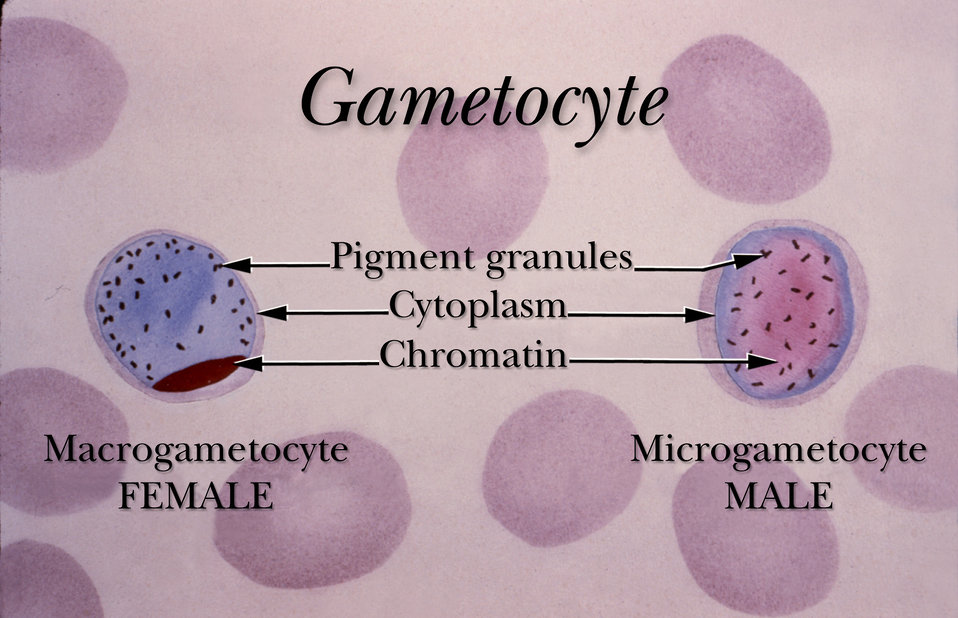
This illustration depicts the morphologic microscopic differences between male and female Plasmodium spp. gametocytes.